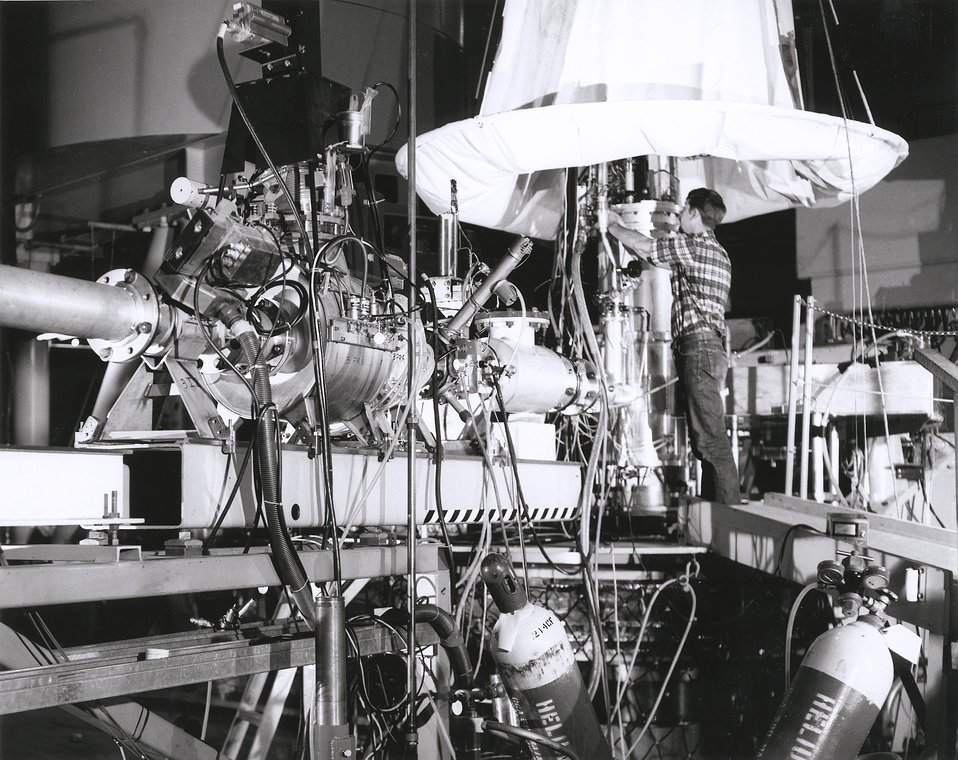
Technician working in the target area in End Station A of the Stanford Linear Accelerator (SLAC) -- the business end of the accelerator complex. c. 1968